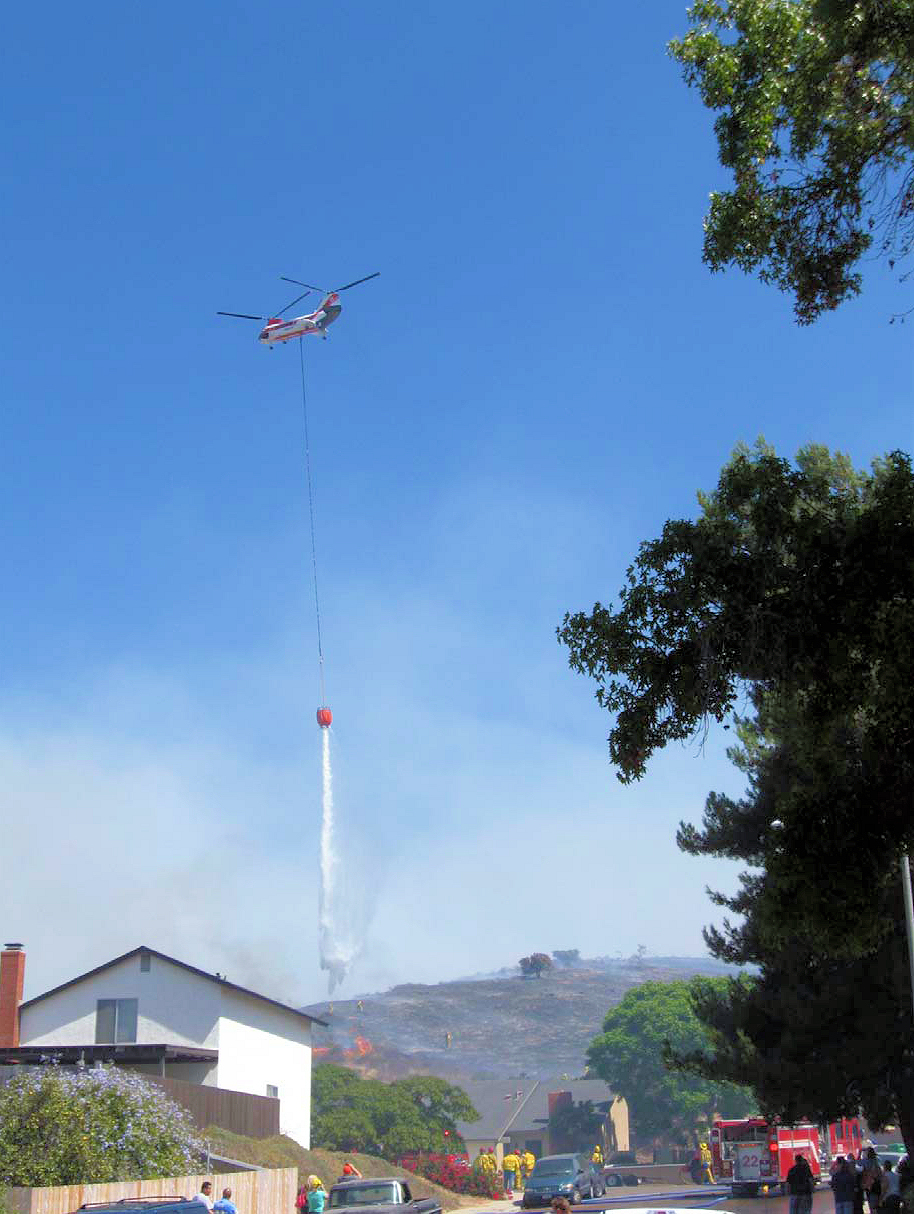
Sept 2010 Jamach Fire- Helicopter Water Drop

A Type 1 Helicopter performs water drop on spot fire during Jamacha Fire. Rex Hambly/USFWS photo.